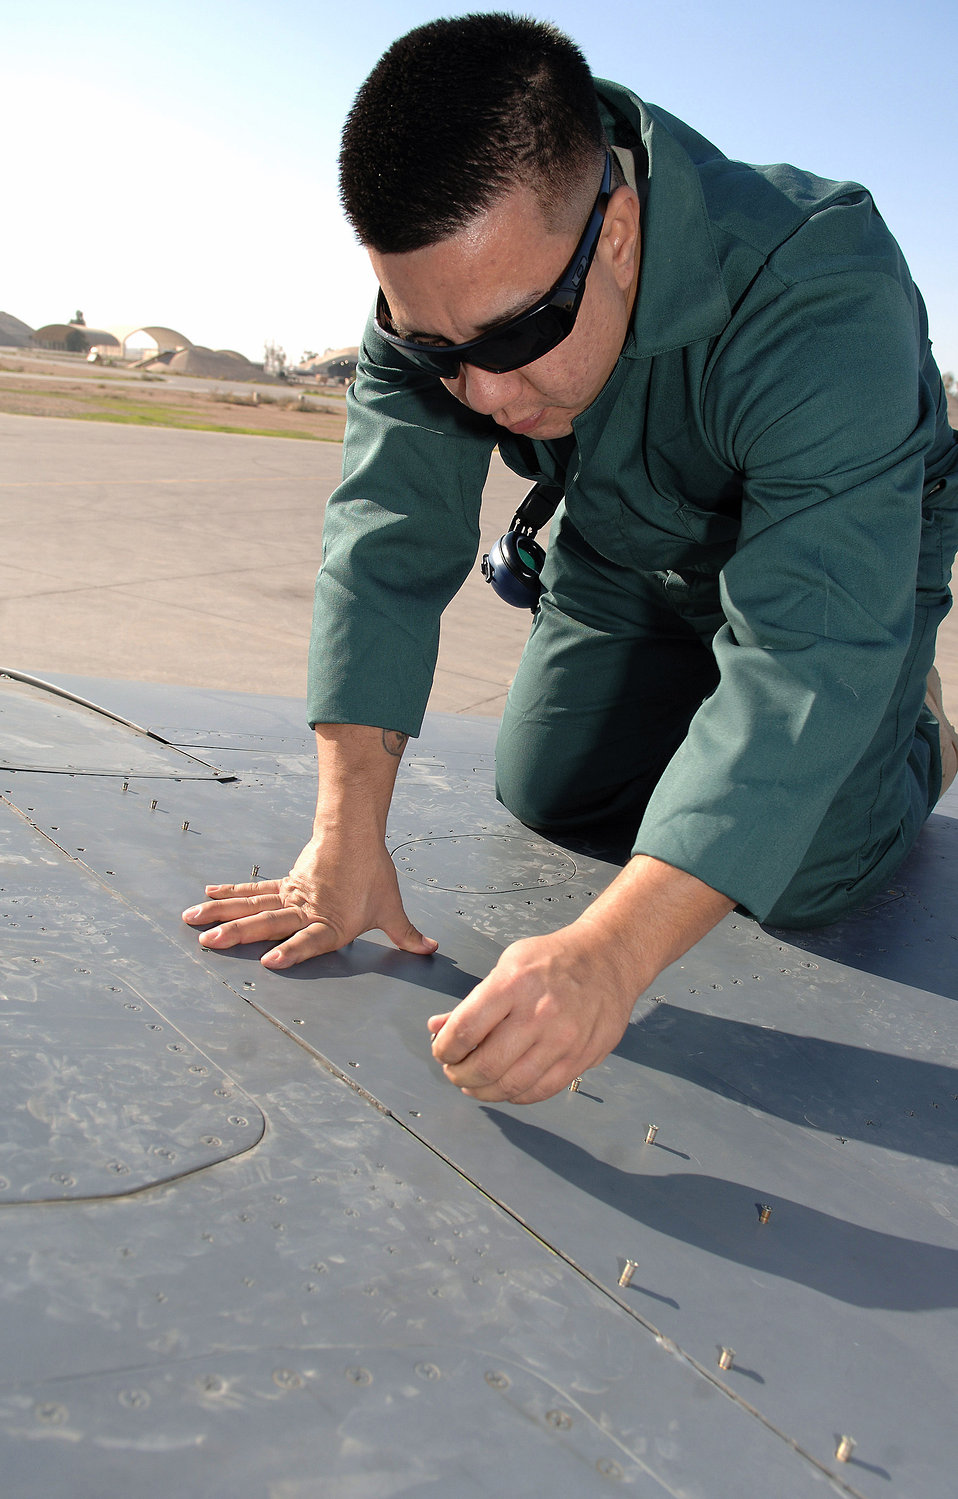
Medics, maintainers test skills at alternative careers

Staff Sgt. Andrew Lomeli installs screws into a wing panel on an F-16 Fighting Falcon Dec. 9 at Joint Base Balad, Iraq. He volunteered as part of the Medics to Maintainers program and interned on the flightline under the supervision of F-16 crew chiefs. The program has allowed more than 110 maintainers and 65 medics to trade work areas and accumulate more than 1,100 volunteer hours. Sergeant Lomeli is the 332nd Expeditionary Medical Group NCO in charge of medical material. He is a native of Colton, Calif., deployed from Lackland Air Force Base, Texas.